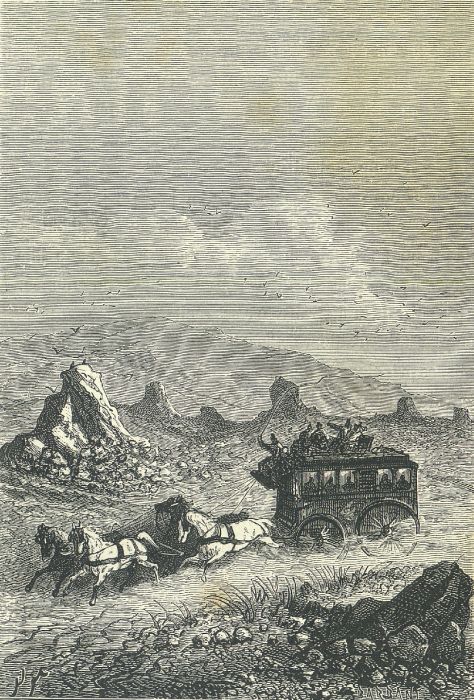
An illustration from the novel 'The Child of the Cavern' (alternative English titles for this novel include: Black Diamonds, Black Indies, Child of the Cavern, or Strange Doings Underground and The Underground City) by Jules Verne drawn by Jules Férat. Polski: Ilustracja powieści Juliusza Verne'a 'Czarne Indie' autorstwa Julesa Férata. Français : 'Les Indes noires', Jules Férat. Orginal description from the book: Français : « Ce sont des cairns », dit James Starr.